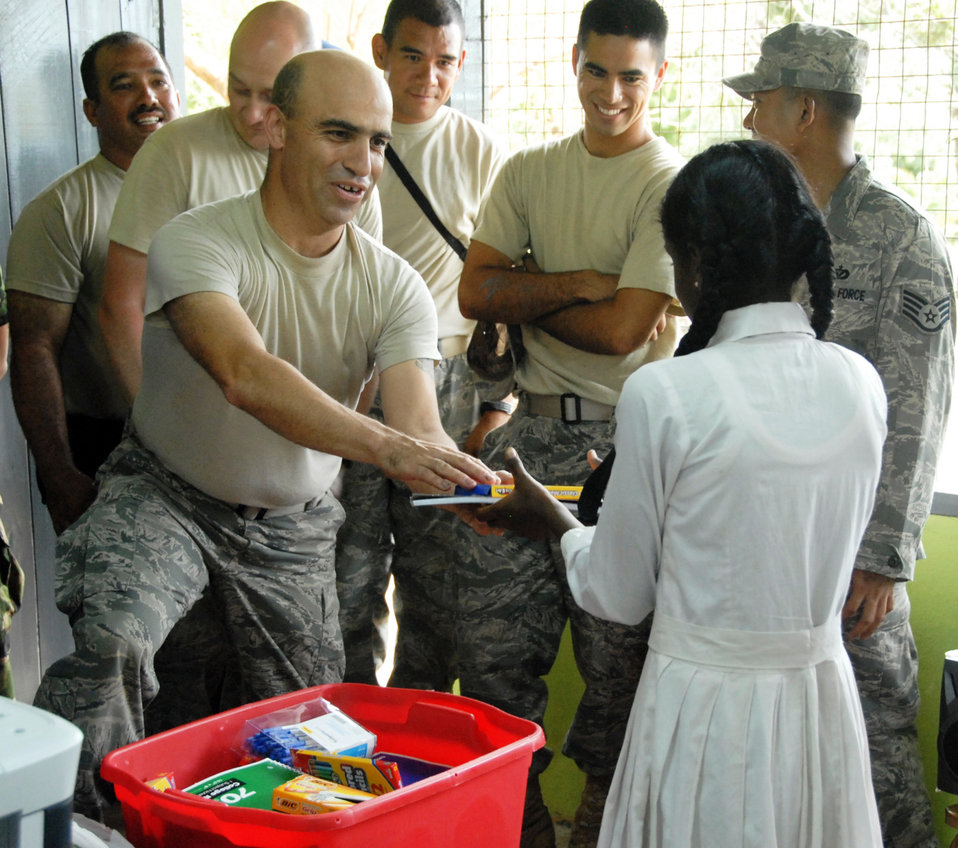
Operation Pacific Angel-Sri Lanka concludes

Air Force civil engineers donate school supplies to children from the Semandaluwa Kanista Vidyalaya primary school Aug. 21, 2010, in Sri Lanka. The Pacific Angel civil engineering teams repaired and refurbished two primary schools, which improved the educational environment for nearly 200 students.